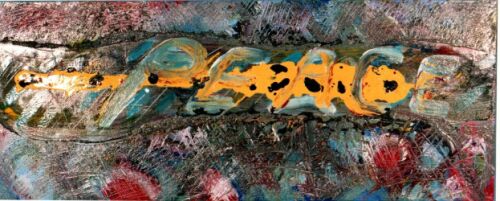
image d'une œuvre de Massimo Taccon